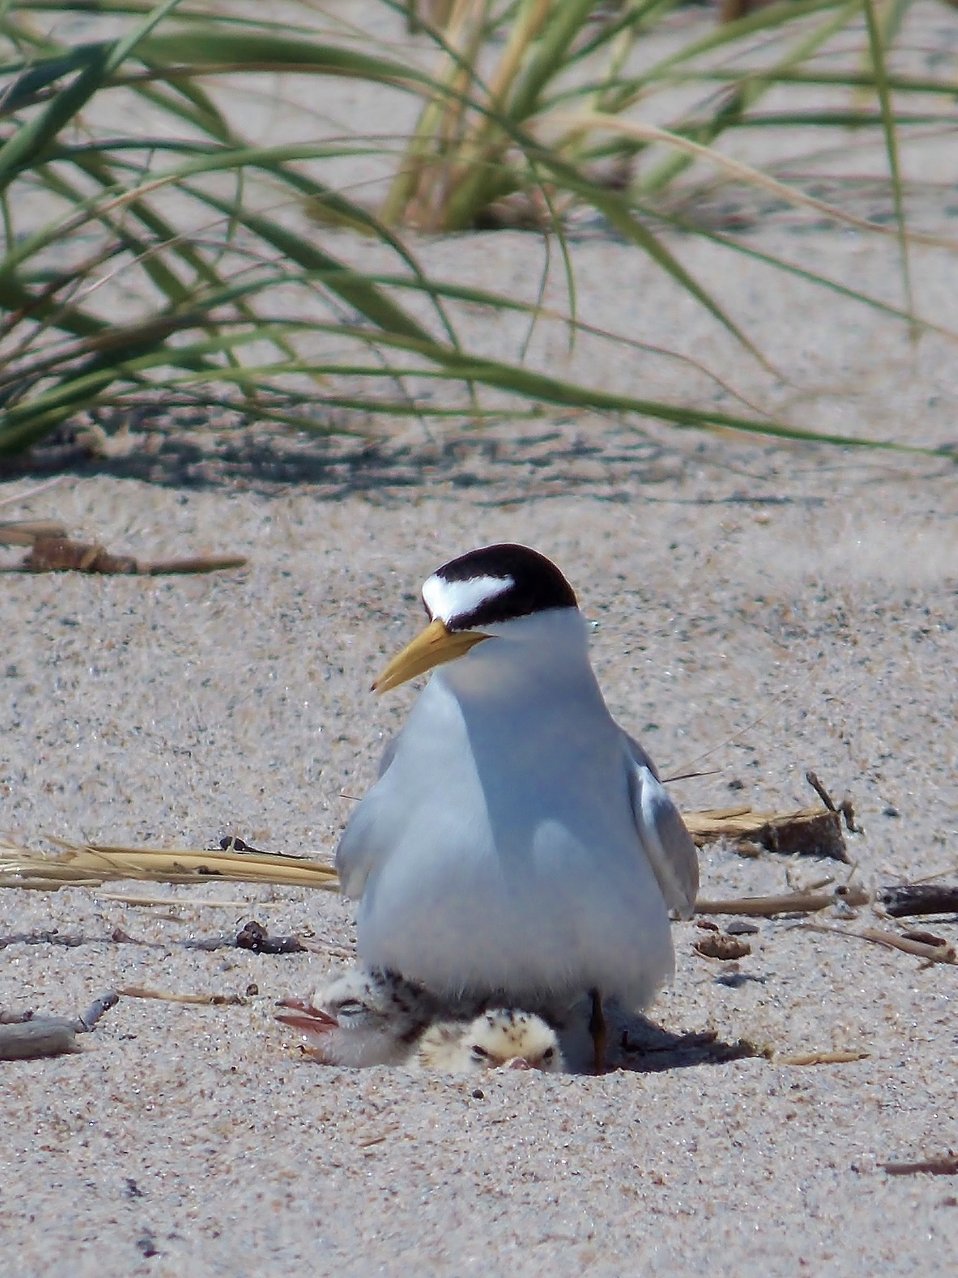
Least Tern with Chicks at Rachel Carson National Wildlife Refuge

Credit: Kaiti Titherington/USFWS

www.fws.gov/refuge/rachel carson/